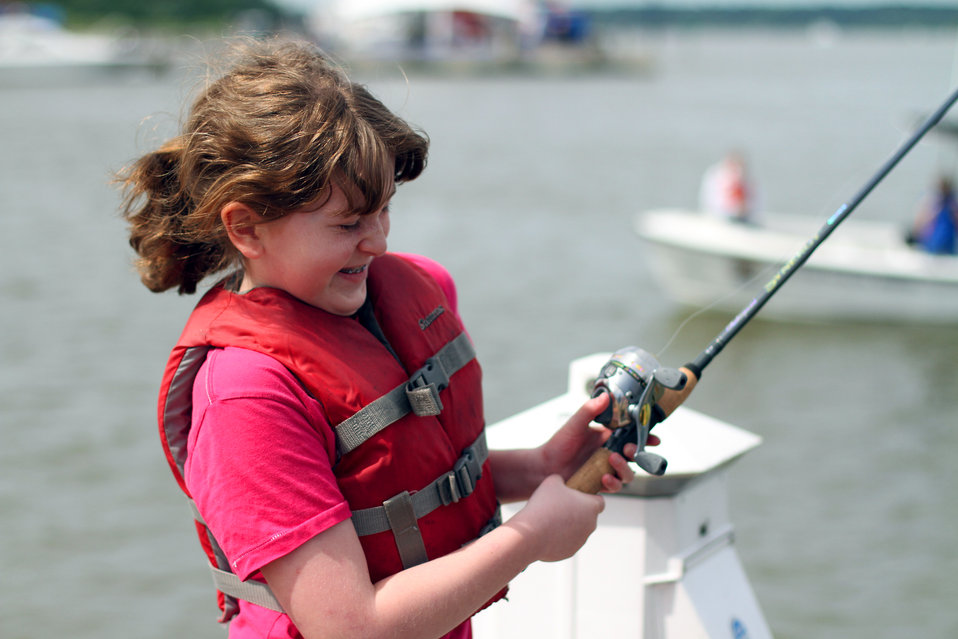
Reeling in a big one!